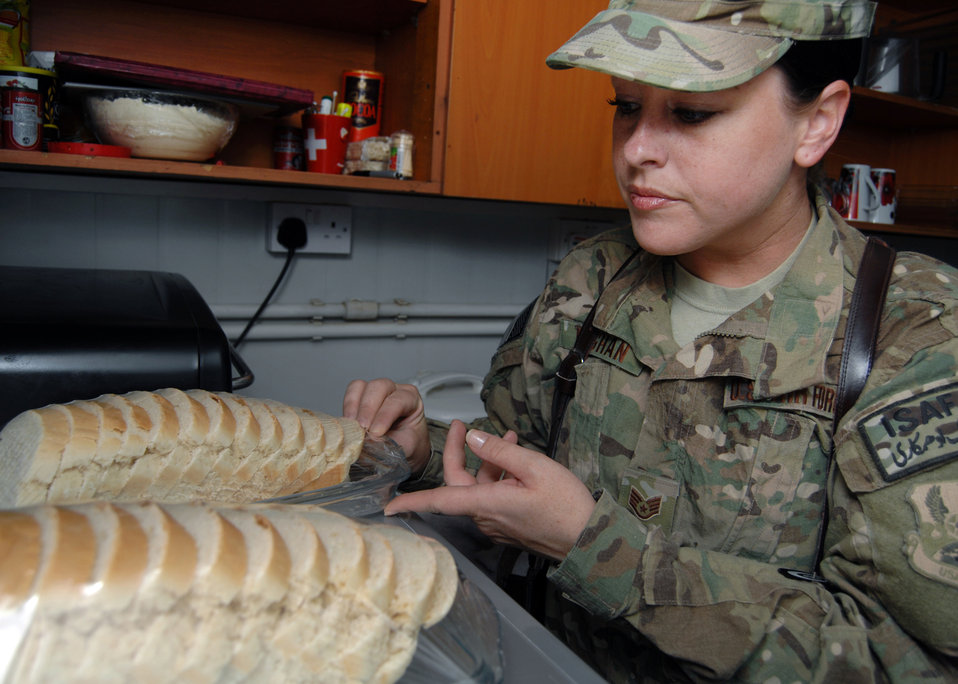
Inspecting bread storage

Staff Sgt. Jennifer Vaughan inspects the storage of freshly baked bread in one of the contractor camps at Kandahar Airfield, Afghanistan, Sept. 13, 2012. Vaughan educates the camp cooks and managers on ways they can improve their health and safety levels. Vaughan is a 451st Air Expeditionary Wing public health technician.